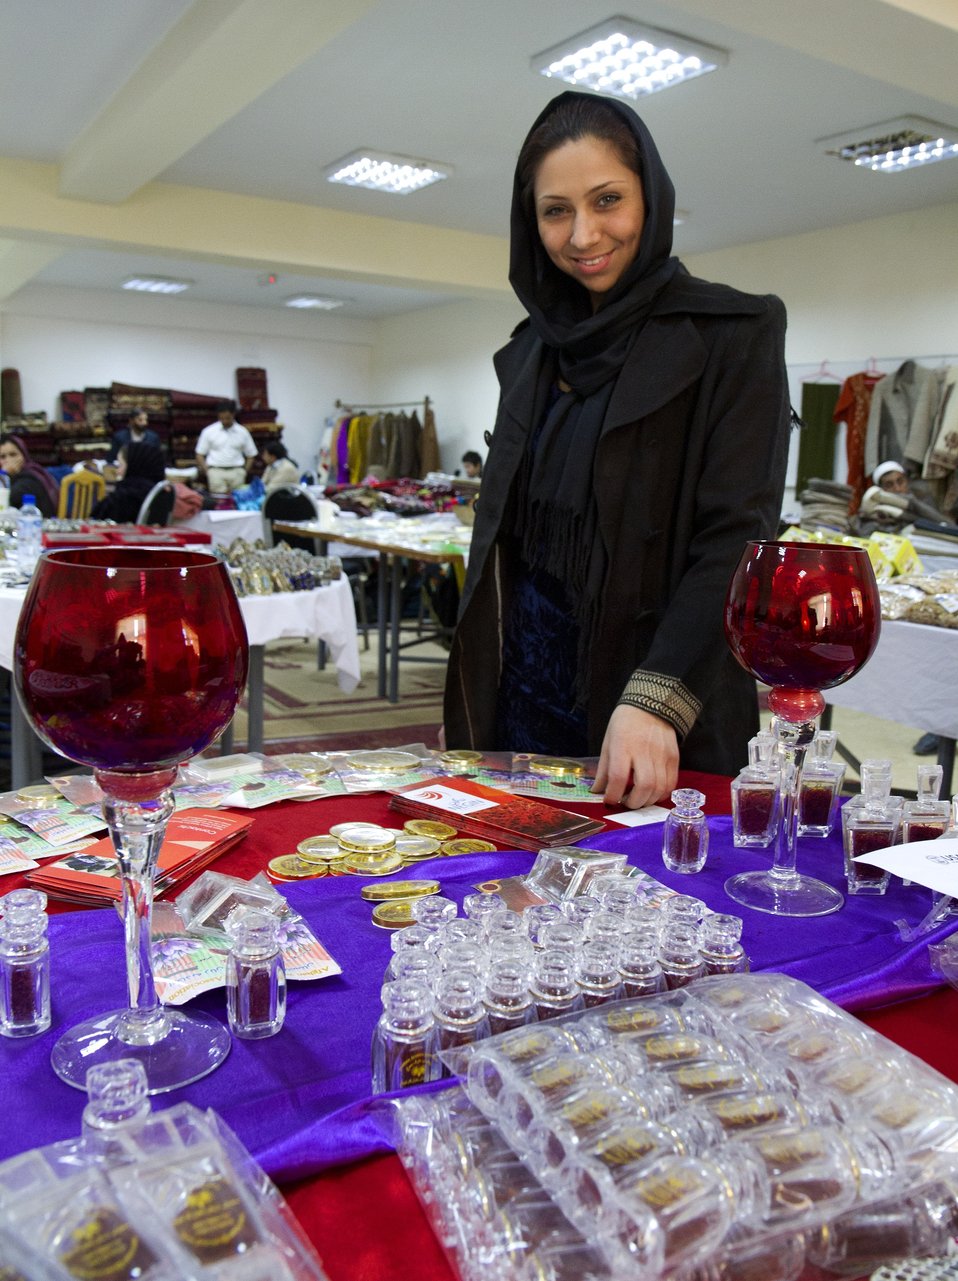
Negin Saffron

Ms. Weeda Sarfarazy works for a Herat-based company called Negin Saffron. Saffron flourishes in western Afghanistan and is one of Afghanistan’s many high-value agricultural products. In early December, Afghan businesswomen from around the country gathered in Kabul for a two-day exhibition organized by USAID. The expedition gave Afghan businesswomen an opportunity to grow their businesses and contribute to their country’s economy.